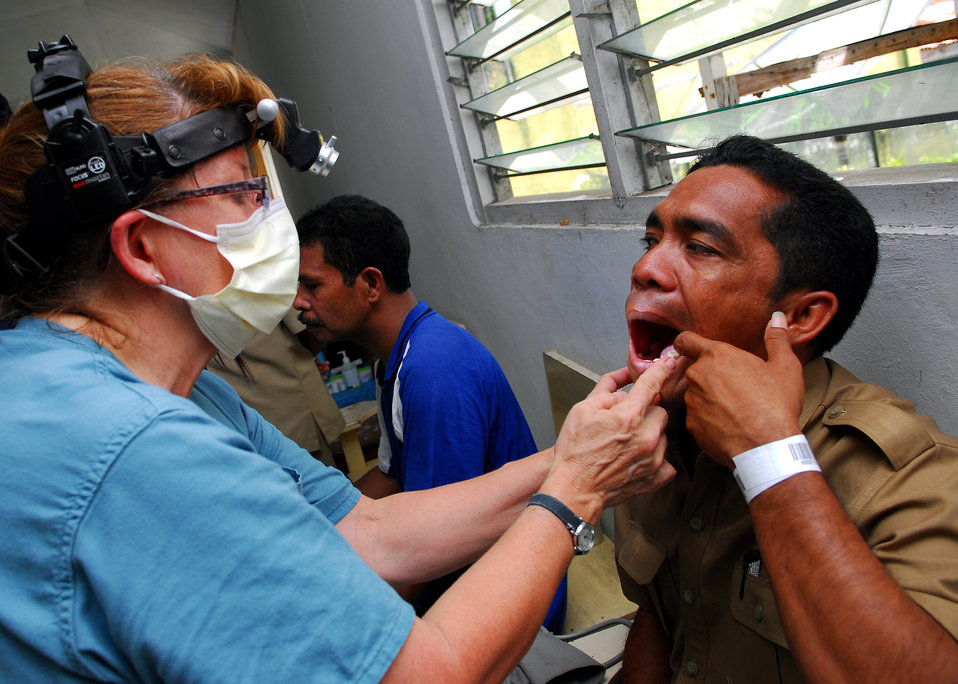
Dr. Jan Westberry Examines a Patient’s Tooth

Dr. Jan Westberry, a member from University of California, San Diego Pre-Dental Society, examines a patient’s tooth during a dental civic action program in Tidore, Indonesia, on July 20, 2010. Mercy is in the North Maluku Islands conducting Pacific Partnership 2010, the fifth in a series of annual U.S. Pacific Fleet endeavors conducted in Indonesia as a disaster relief exercise aimed at strengthening regional partnerships.